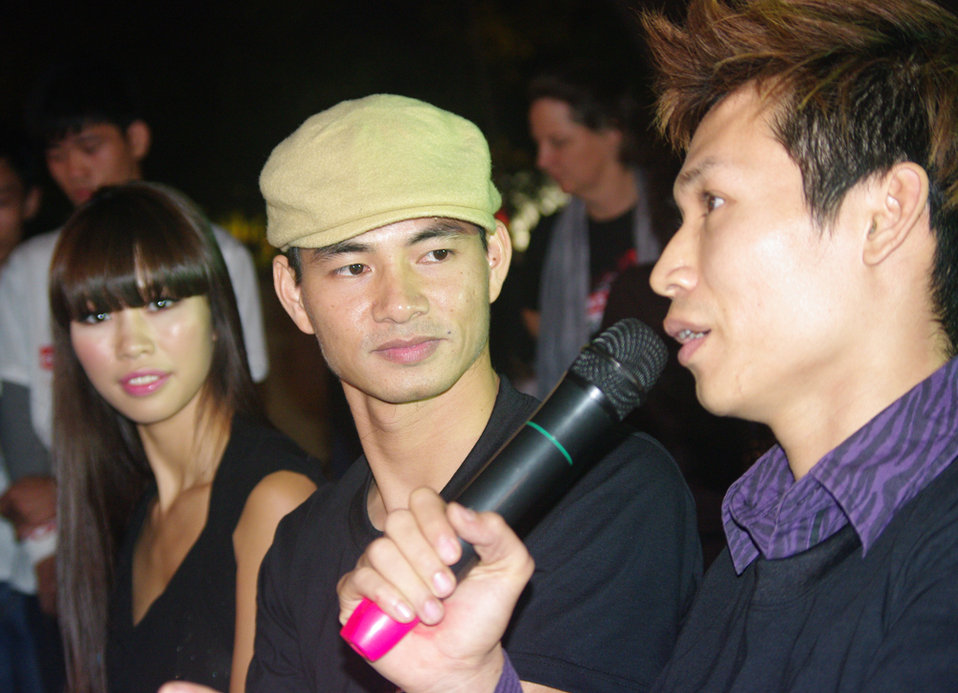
USAID supports dance4life to raise awareness of HIV and fight stigma in Vietnam

Famous local artists like the Vietnamese singer My Dung, Minh Quan, comedian Xuan Bac and Tu Long, Big Toe Dance Crew, who have been with dance4life Vietnam from the very beginning, will give up their time to perform during this worldwide event. The event is made possible by the support of the United States Agency for International Development (USAID) and other donors.